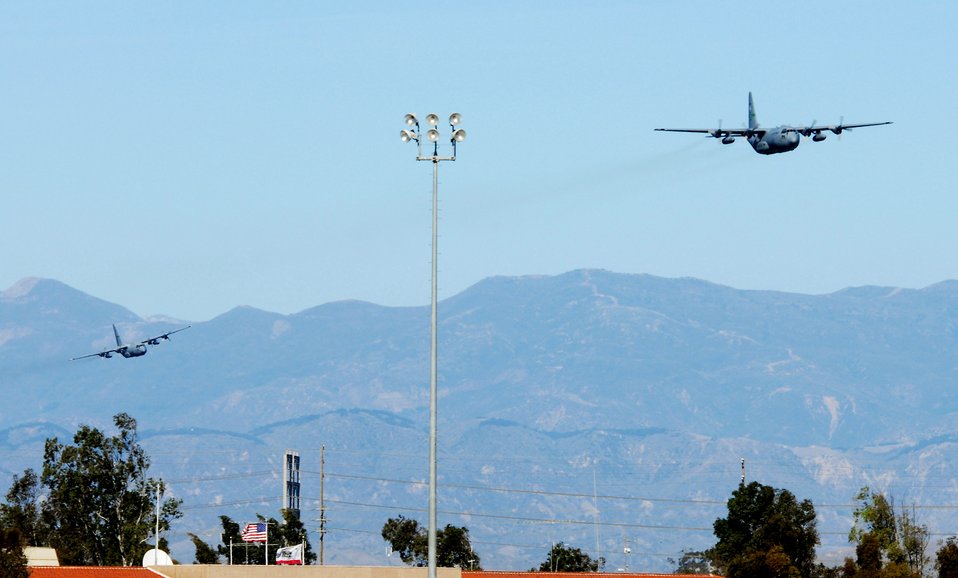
Farewell Hercules

Two C-130 Hercules from the 146th Airlift Wing fly Dec. 2 over Channel Island Air National Guard Station in California for the last time. Air National Guard flew their last two Hercules E for the final time. The aircraft were delivered to the Air Force in the early 1960's and came to the 146th in 1974. They served in many ways including bringing in relief supplies and tranporting injured citizens natural disasters, most recently Huricane Katrina. The wing's C-130s were also capable of delivering fire retardant to help fight wildfires.